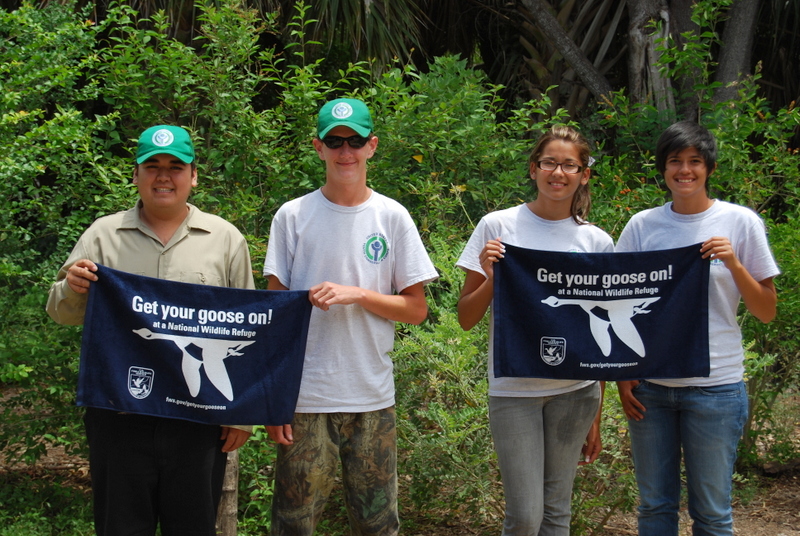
Get Your Goose On!

Photo taken at Santa Ana National Wildlife Refuge in southern Texas.